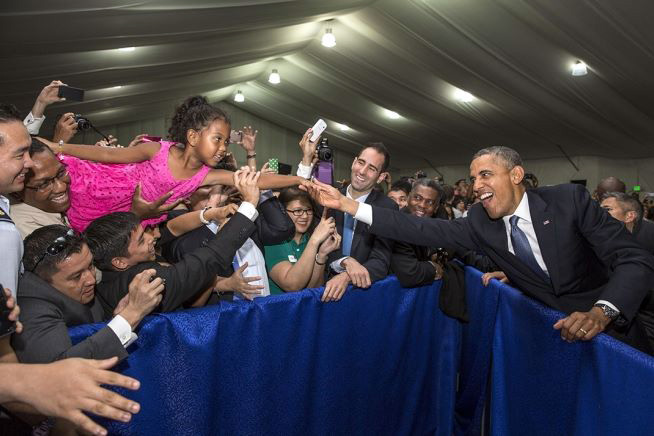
President Obama Stretches to Shake Hands With a Young Girl in Manila

President Barack Obama stretches to shake the hand of a young girl held aloft during a U.S. Embassy meet and greet in Manila, Philippines, on April 28, 2014.